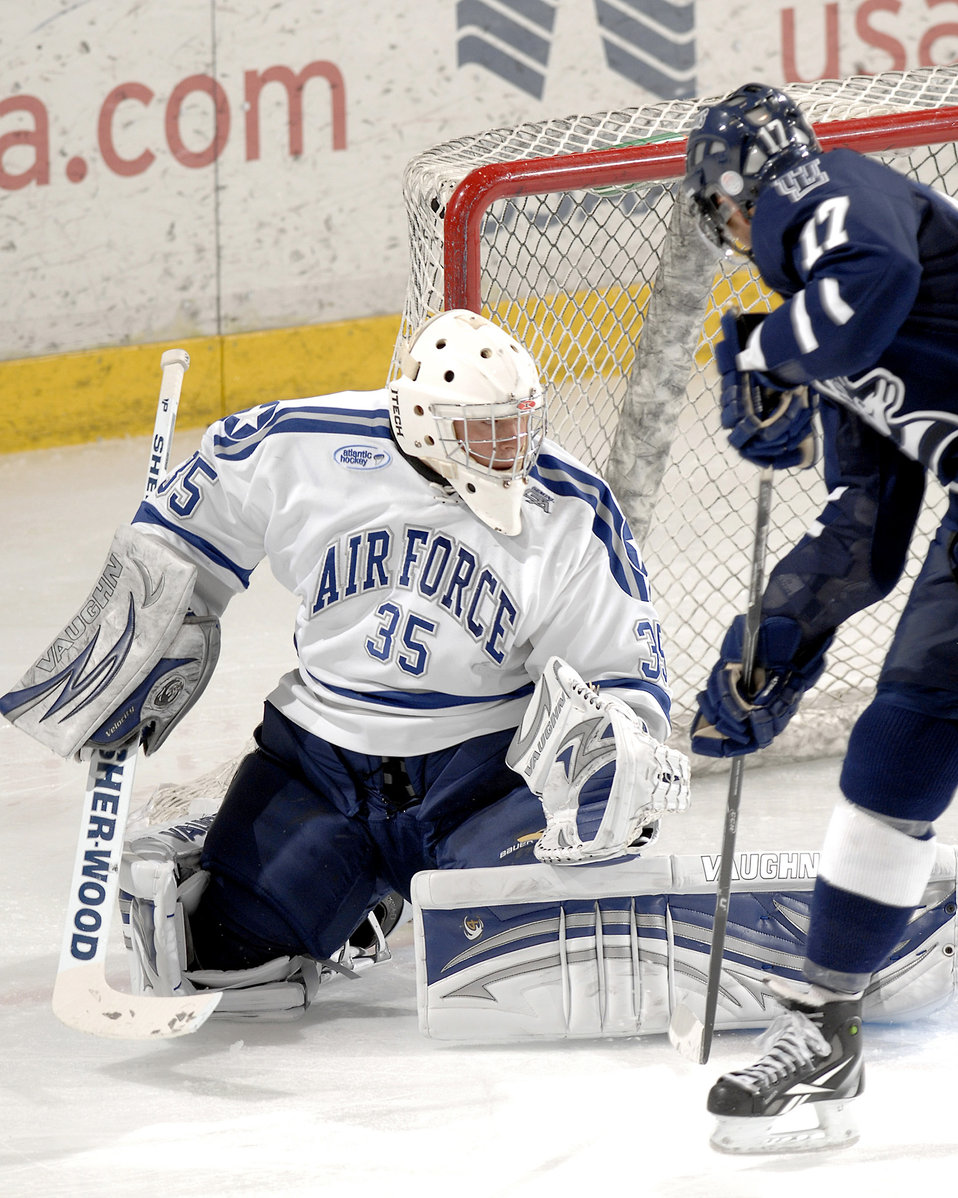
Falcons defeat the Pronghorns

Falcon sophomore David Bosner protects the goal during a hockey exhibition game against the University of Lethbridge from Alberta, Canada, Oct. 4, 2010, at the U.S. Air Force Academy's Cadet Ice Arena in Colorado Springs, Colo. Bosner played the first 30 minutes, making nine saves and did not allow a goal as the Falcons defeated the Pronghorns 4-3 in overtime.